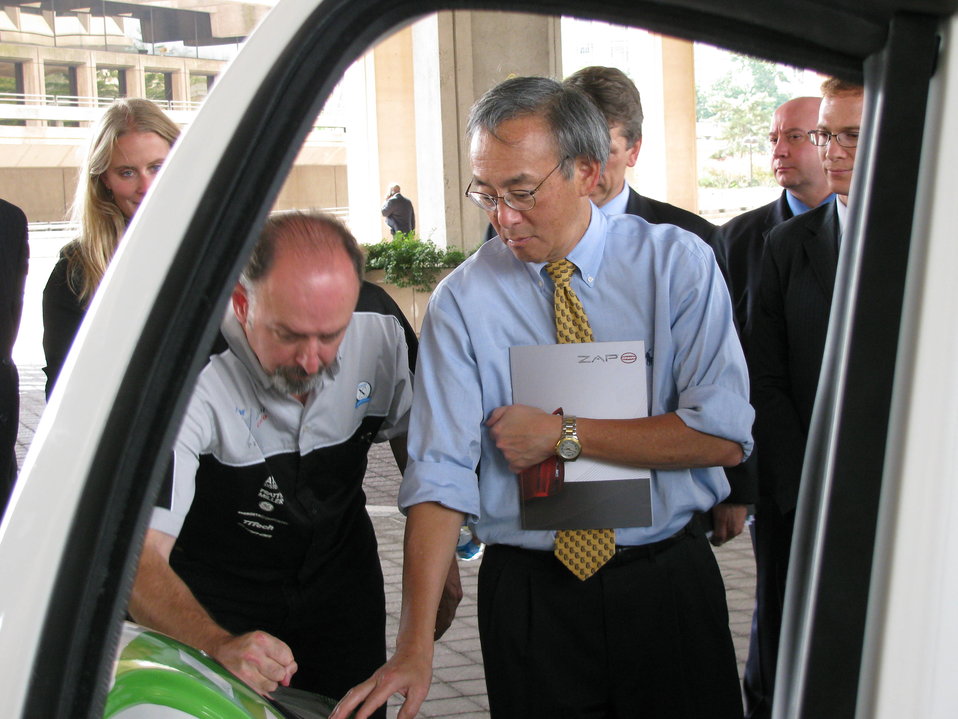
X Prize 027